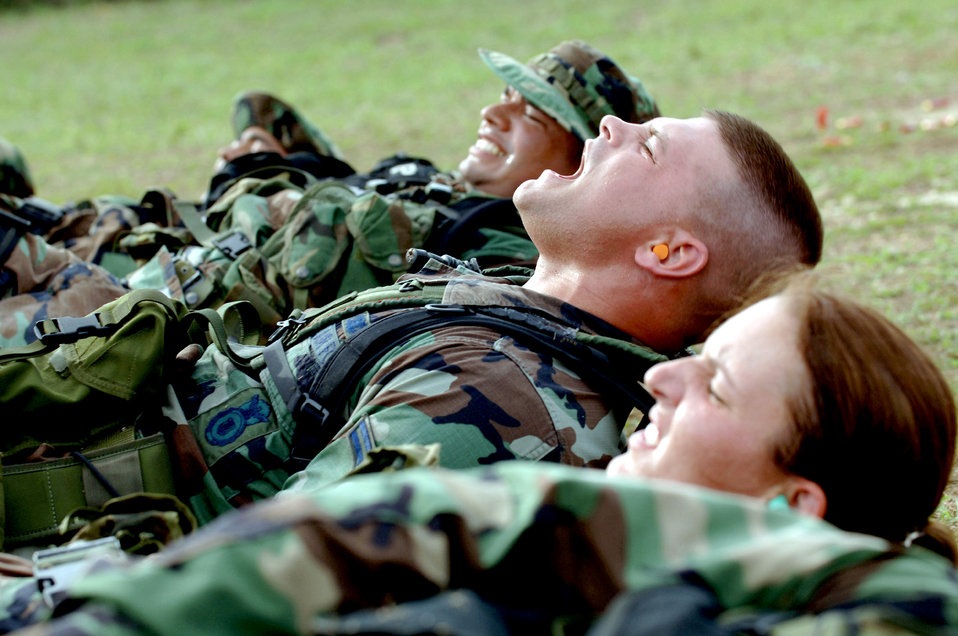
Pushing the limit

ANDERSEN AIR FORCE BASE, Guam -- Airman 1st Class Dennis Nugent (center) tries to rally his classmates during fatigue-induced flutter kicks during a special response team training course here June 7. The Airmen also completed a one-mile run, push-ups, duck walks, gas-mask donning and weapon shooting. The six-week course provides intense physical conditioning along with land navigation, special weapons and close combat training. Airman Nugent is assigned to the 613th Contingency Response Group.